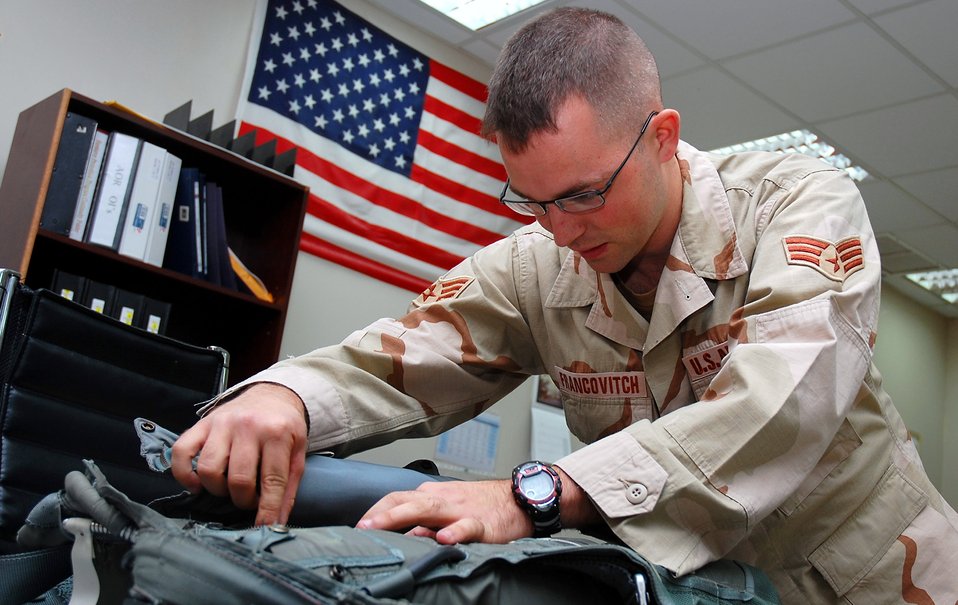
Life support

Senior Airman Joshua Francovitch performs a routine inspection on a back-automatic parachute Nov. 2 in Southwest Asia. Airman Francovitch, a 386th Expeditionary Operations Group aircrew life support technician, is deployed from Yokota Air Base, Japan.